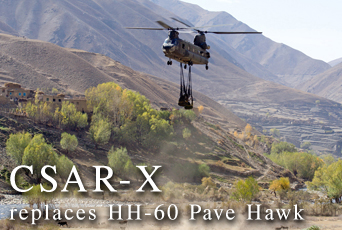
CSAR-X replaces HH-60 Pave Hawk